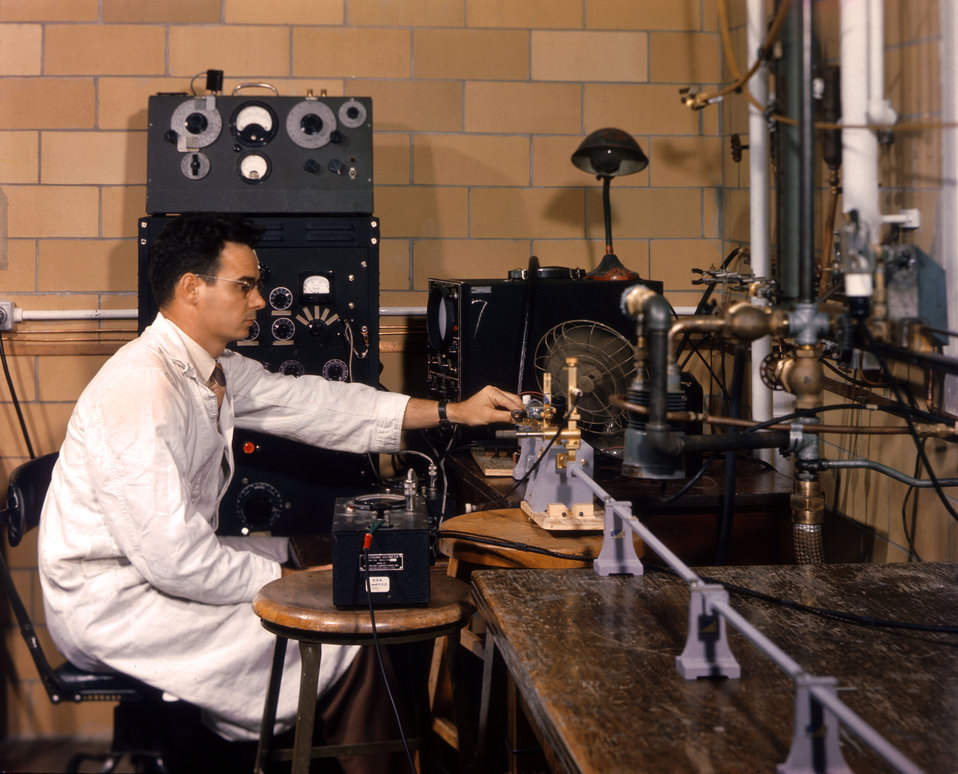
Microwave Spectroscopy Oak Ridge

58-1219c DOE photo Ed Wescott 1958 Oak Ridge Tennessee